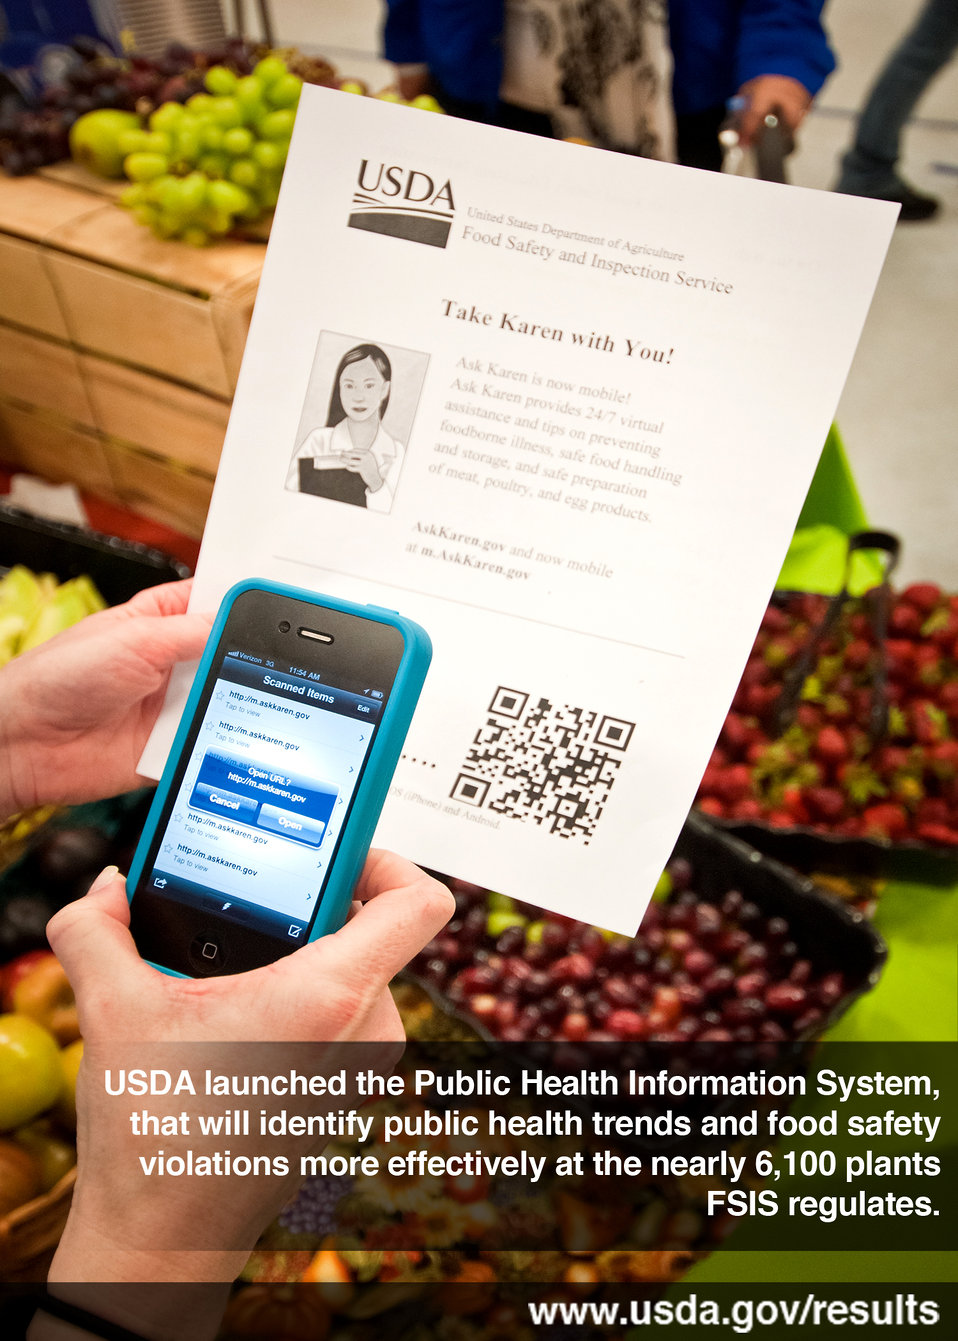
Print-FoodSafety

“Ask Karen,” an online food safety question and answer service provided by the U.S. Department of Agriculture Food Safety Inspection Service is now mobile app. “Ask Karen” provides 24/7 virtual assistance and tips on preventing foodborne illness, safe food handling, storage and safe preparation of meat, poultry and egg products.